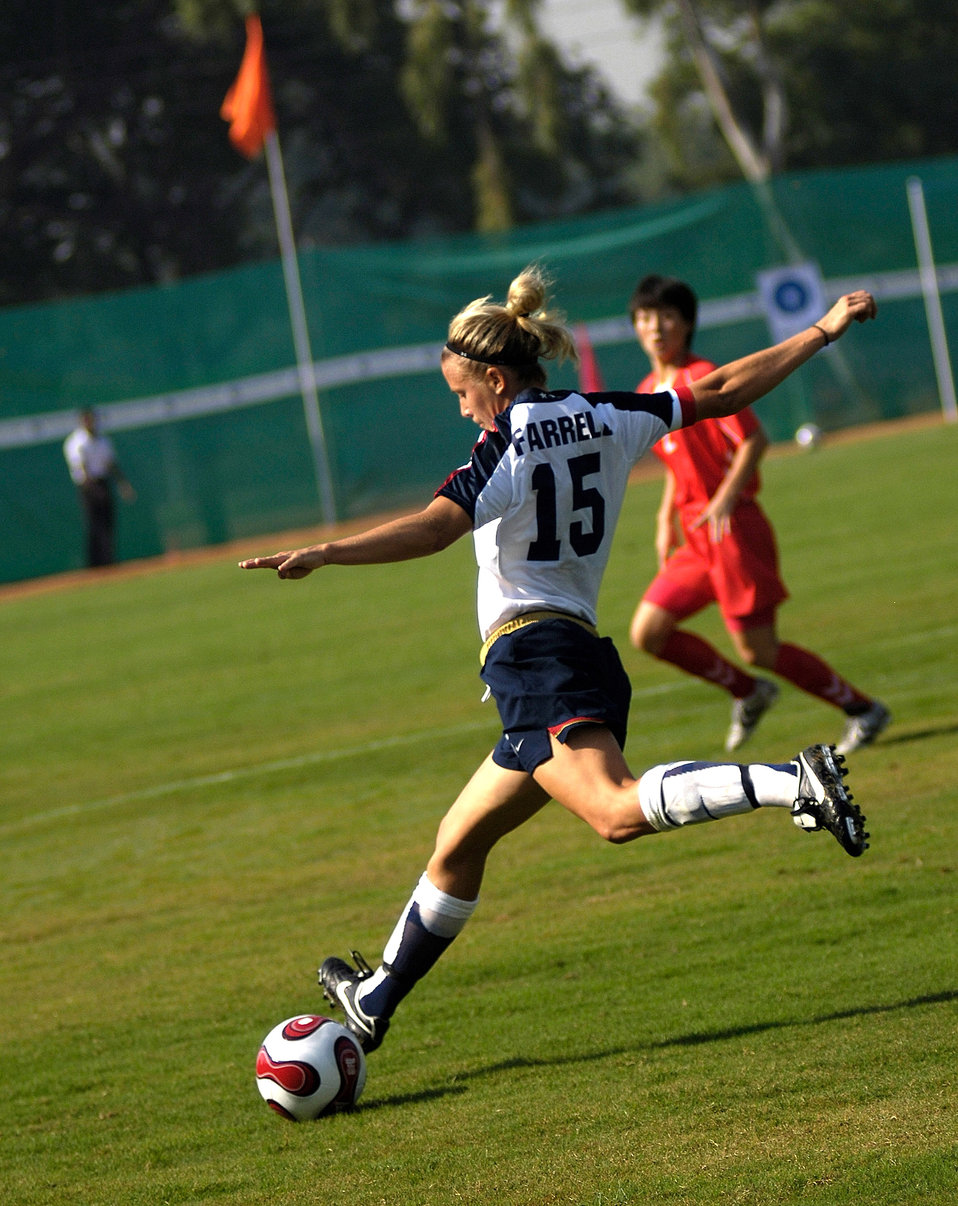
4th CISM World Military Games

U.S. Army Capt. Randee Farrell, passes the ball as an opponent from the Democratic People's Republic of Korea moves in during the Military World Games' women's soccer competition in Hyderabad, India, Oct. 14. DPR Korea defeated the U.S. team 4-0. The Conseil Internationale du Sport Militaire's Military World Games event is the largest international military Olympic-style event in the world. In this year's fourth edition of the games, 103 countries and more than 5,000 athletes are competing Oct. 14 to 21 in boxing, diving, soccer, handball, judo, military pentathlon, parachuting, sailing, shooting, swimming, volleyball and track and field. The purpose of the Military World Games is to promote